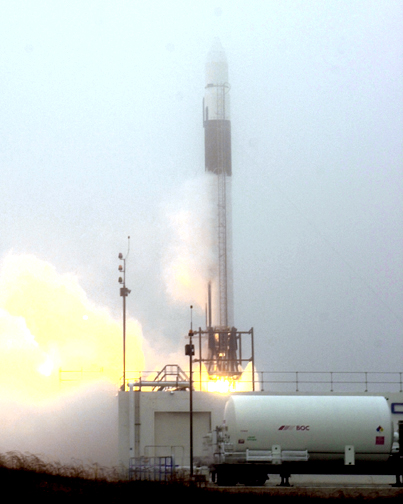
Space launch program moves ahead after successful test

VANDENBERG AIR FORCE BASE, Calif. -- The main engine of the Falcon I rocket ignites during a full-wet dress rehearsal here recently.